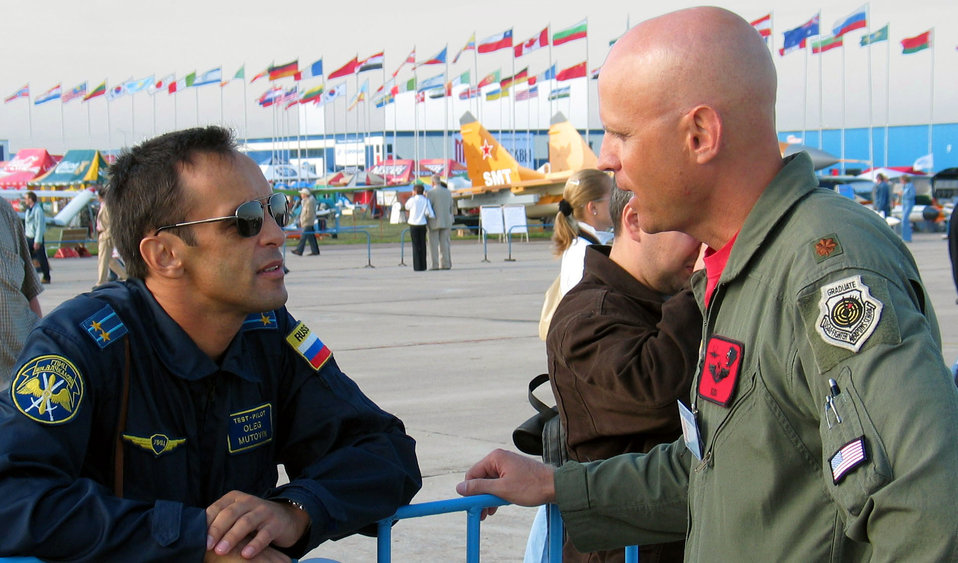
Talkin' shop

ZHUKOVSKY AIRFIELD, Russia -- Maj. Wayne Straw talks about the finer points of the F-15E Strike Eagle with Russian air force Lt. Col. Oleg Mutovin on Aug. 22 at the Moscow Aviation and Space Show. Straw is an F-15E weapons systems operator from Royal Air Force Lakenheath, England. Mutovin is a fighter test pilot. This is the first time U.S. military aircraft have been on public display in Russia. Four other U.S. military aircraft are on display here: an F-16 Fighting Falcon, a C-130 Hercules, a KC-135 Stratotanker and a B-52 Stratofortress. Also, the F-15 Eagle performs a daily aerial demonstration. The show ends Aug 24.